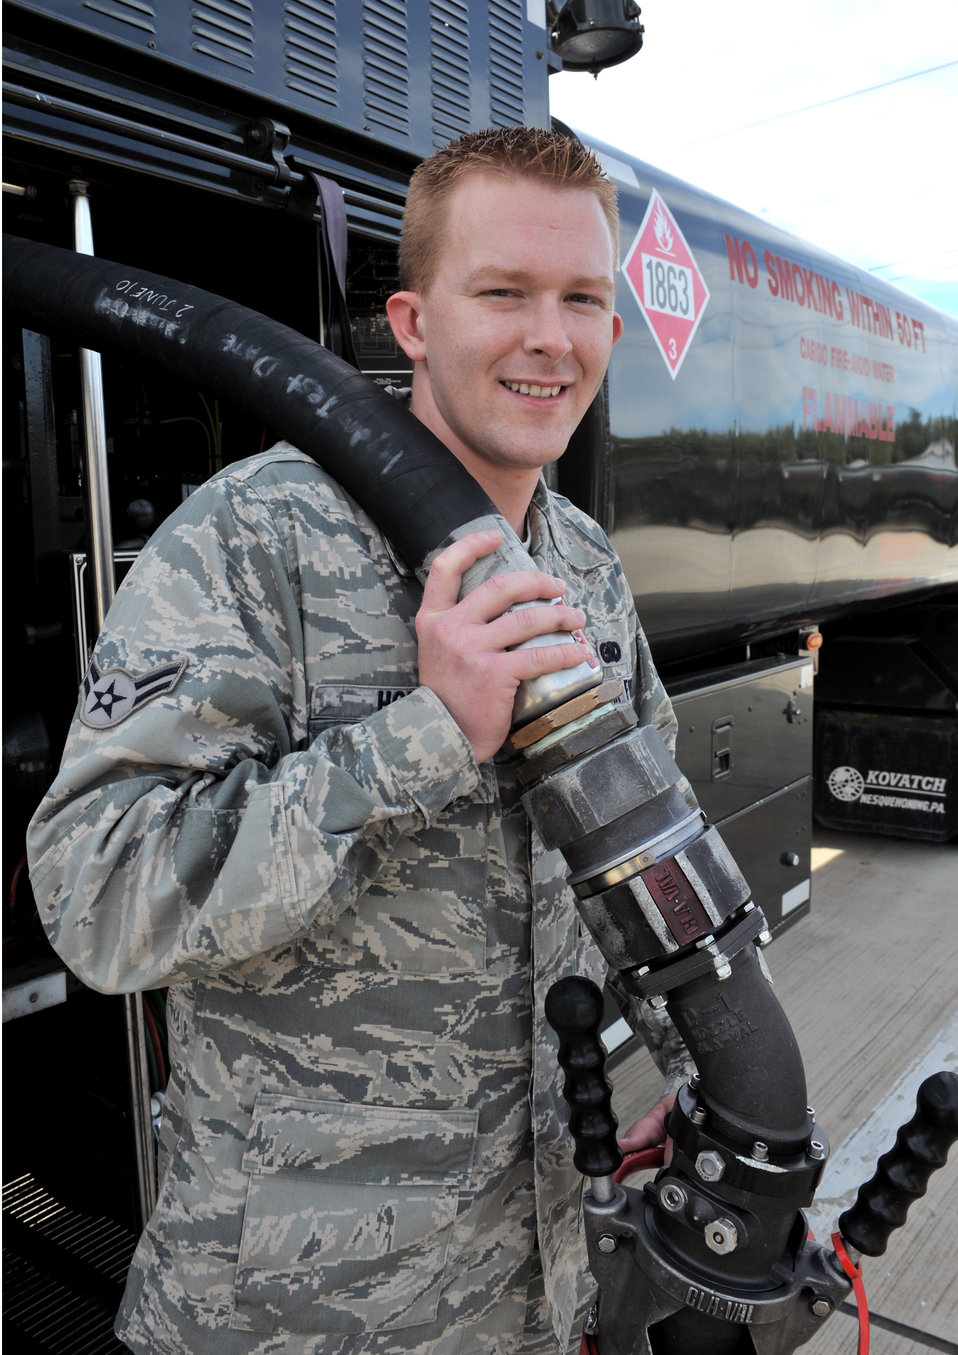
Shaw Airman's quick actions save man's life

Airman 1st Class Brandon Horne poses with a fuel hose Sept. 28, 2010, at Shaw Air Force Base, S.C. Airman Horne performed self aid buddy care to an all-terrain vehicle accident victim Sept. 17, 2010, which help save his life. Airman Horne is a 20th Logistics Readiness Squadron fuel truck operator.